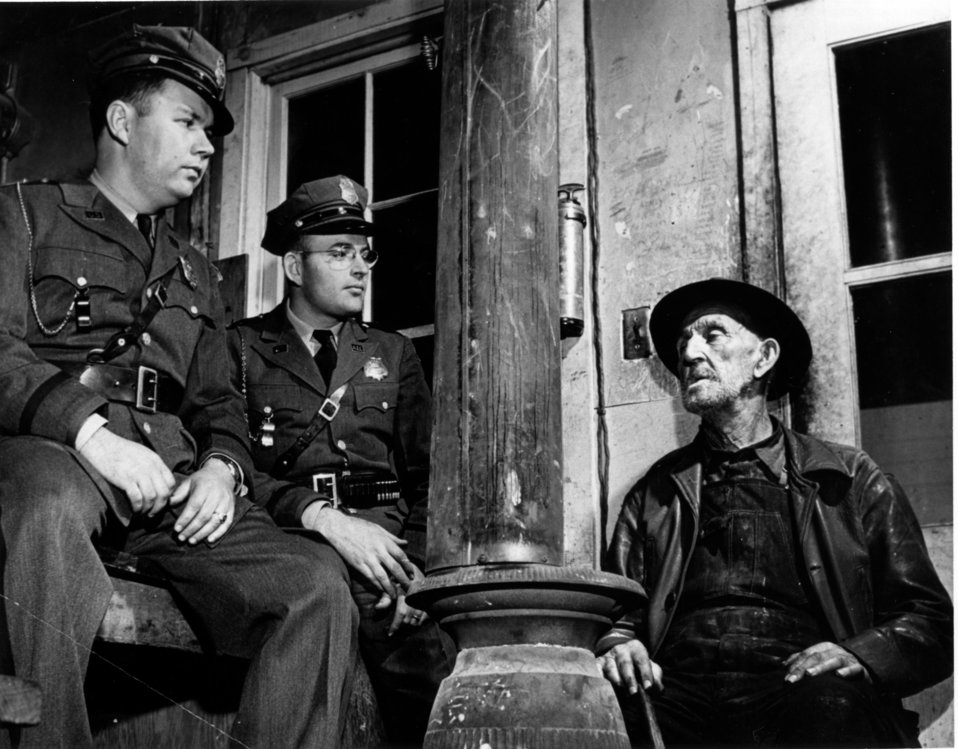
Security at Oak Ridge